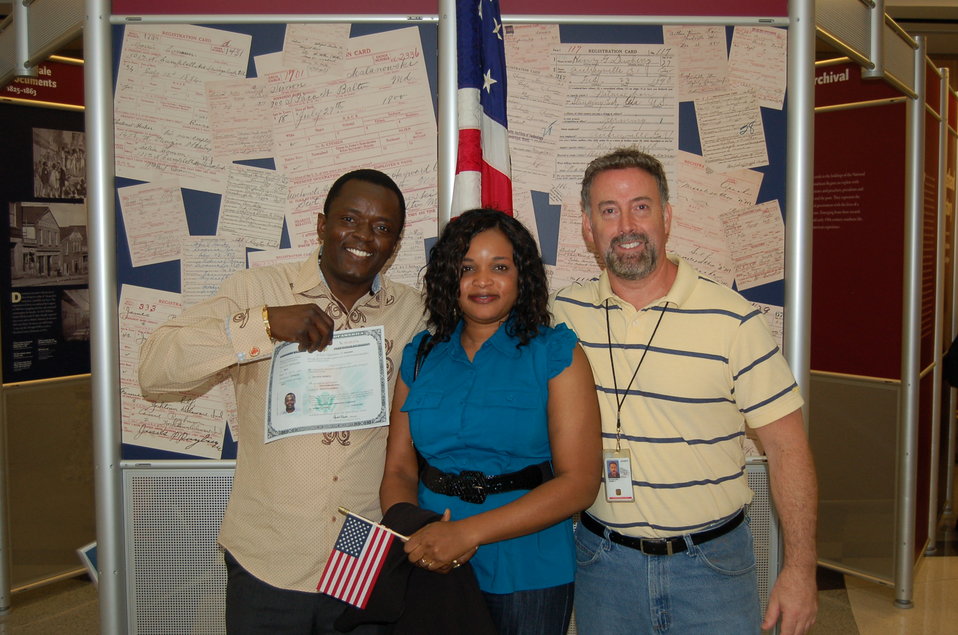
New Citizens